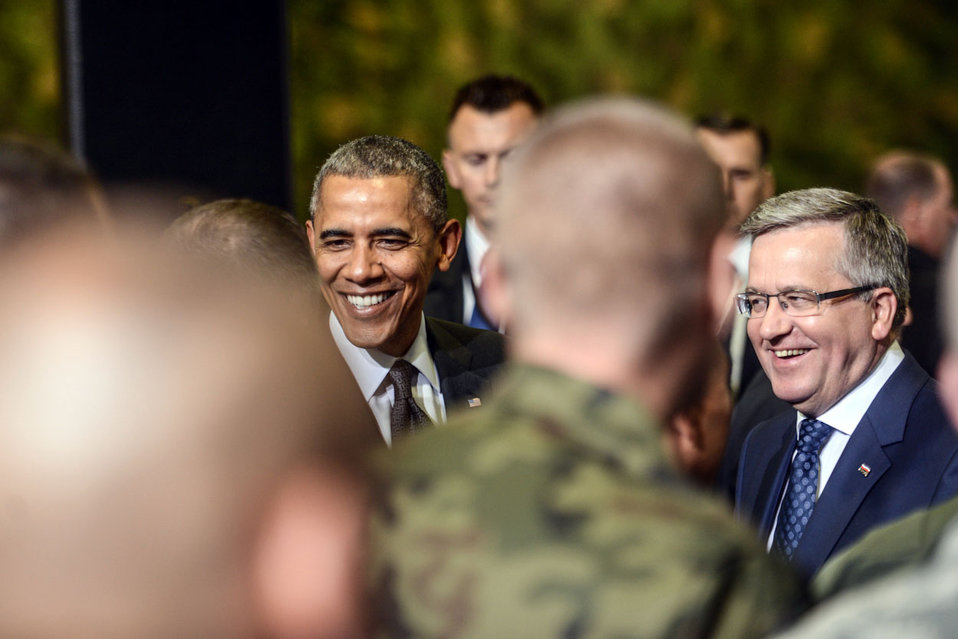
President Obama and Polish President Komorowski Meet With U.S. and Polish Airmen

U.S. President Barack Obama and Poland's President Bronislaw Komorowski meet U.S. and Polish troops at the Okecie Military Airport in Warsaw, Poland, on June 3, 2014. [U.S. Mission to Poland photo by Jakub Szymczuk]